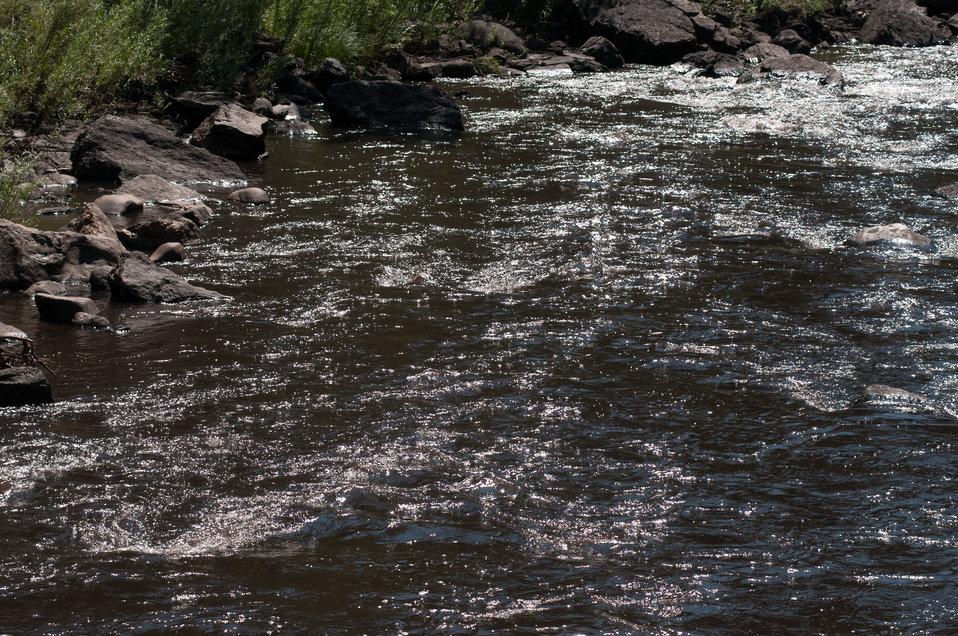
A confluence of two tributaries, the Cache la Poudre and the North Fork of the Cache la Poudre, near Seaman Reservoir, 60 miles north of Denver, Colorado on Friday, July 20, 2012, have been transformed from clear mountain waters to a nearly black water, heavily laden with ash, silt, and burnt debris that was recently washed down mountainsides by thunderstorms. The mountainsides were burned by the Hewlett Gulch Fire (May 14, 2012), in the Poudre Canyon area. At its peak more than 400 firefighters were battling fires pushed by 50 mph winds. When the last embers were cooled, more than 12-square miles lay blacked at a cost of approximately 3.2 million dollars. The aerial distribution of straw has successfully kept nearby Seaman Reservoir clean for the drinking water of the City of Greeley. Forest Service lands receive straw, while private and other lands receive a seed mix and straw to promote ground cover plant growth on ash-covered lands. In total, 1,800 tons of straw will be applied during the 14-day operation. One quarter of the cost was paid by the City of Greeley and the U.S. Department of Agriculture funded the remainder.